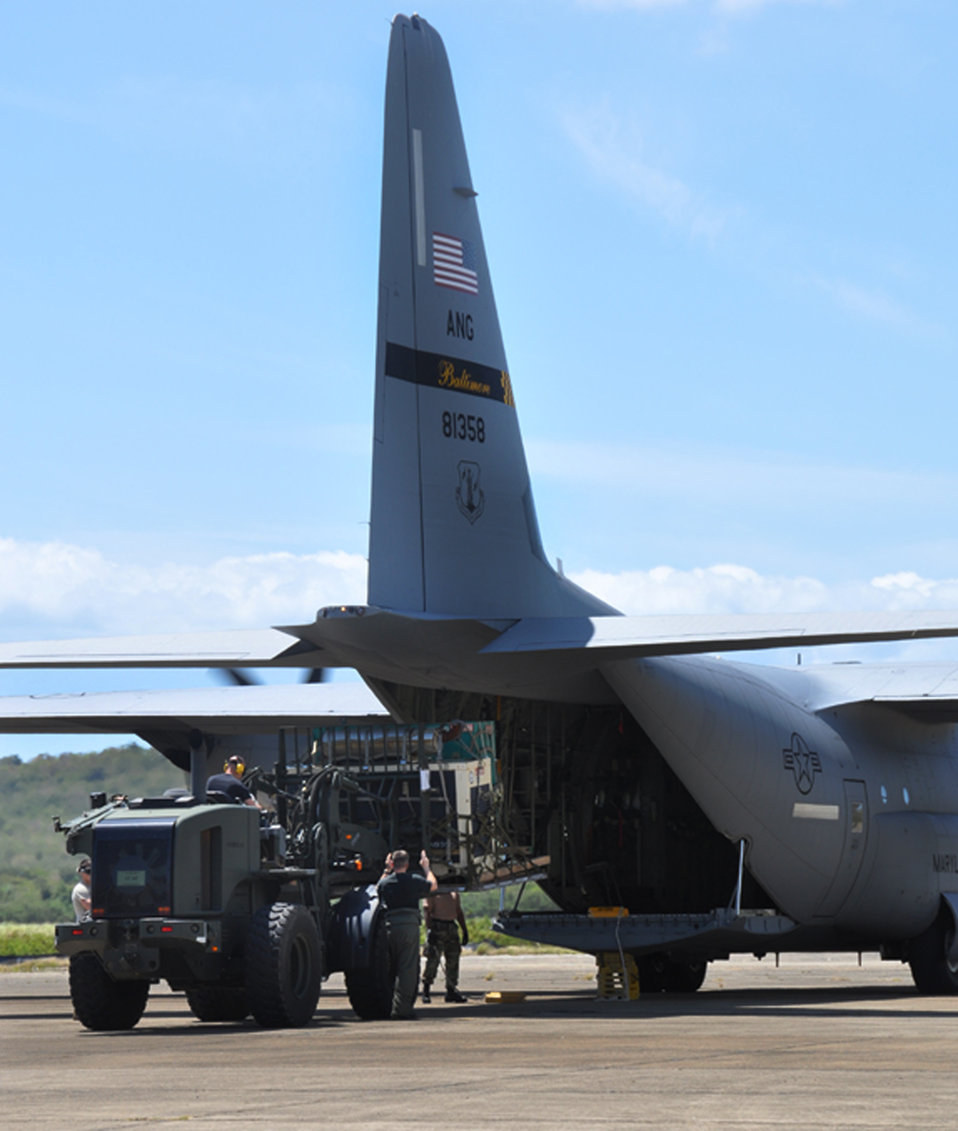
Vigilant Guard exercise

Airmen from the 817th Contingency Response Group guide a pallet onto a C-130 Hercules from the Maryland Air National Guard during the Vigilant Guard exercise held in Puerto Rico March 23 to 29. The exercise focused on a coordinated response by local and federal agencies following a natural disaster in Puerto Rico. The 817th CRG is part of the 621st Contingency Response Wing at McGuire Air Force Base, N.J.